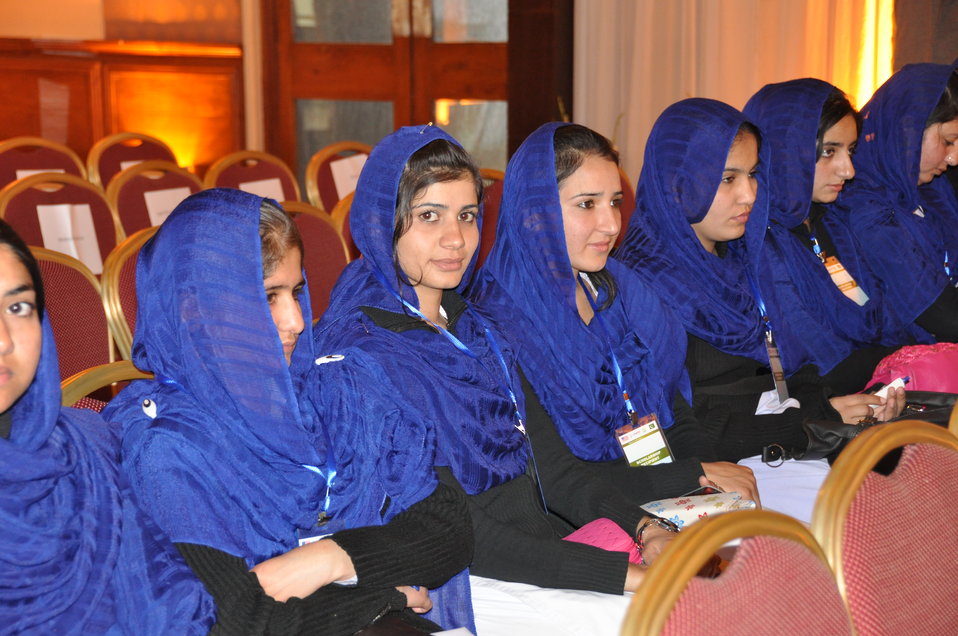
Scholarship recipients